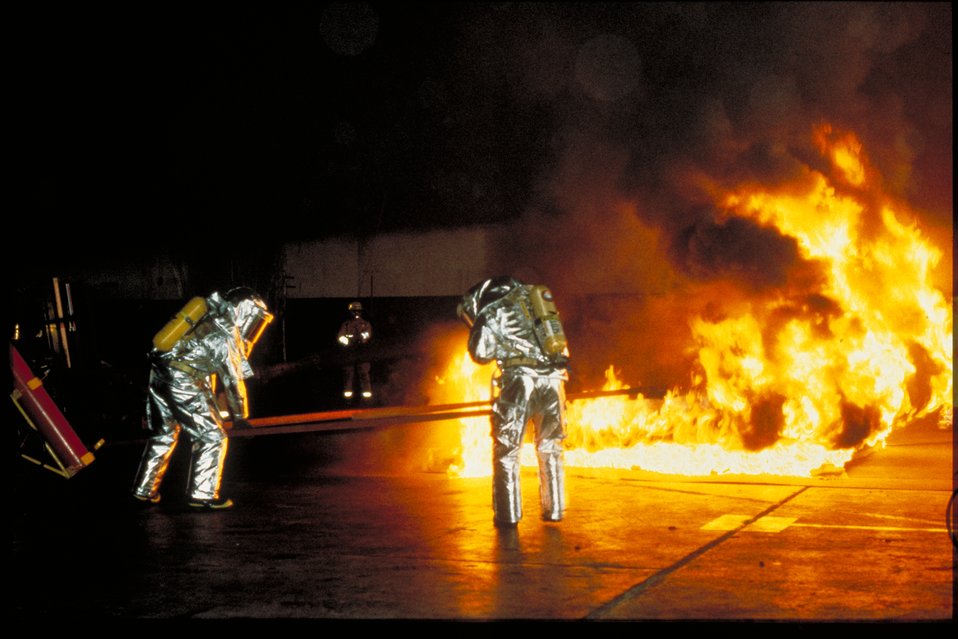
Making Tall Spaces More Fire Safe

NIST researchers are working with the U.S. Naval Facilities Engineering Command and five manufacturers from the automatic fire alarm and sprinkler industry in an effort to develop information needed to design fire safety plans specifically for high-ceiling structures, such as aircraft hangars, hotel atriums, and warehouses. A research team assembled by the cooperating organizations conducted 35 full-scale experiments in two Navy aircraft hangars located in Hawaii and Iceland. Data were collected on the movement of smoke and heat in two high bay hangars for a variety of fire sizes, using various jet aviation fuels, and with both open and closed hangar doors. The tests also incuded evaluation of prototype fire detection and suppression methodologies and equipment.